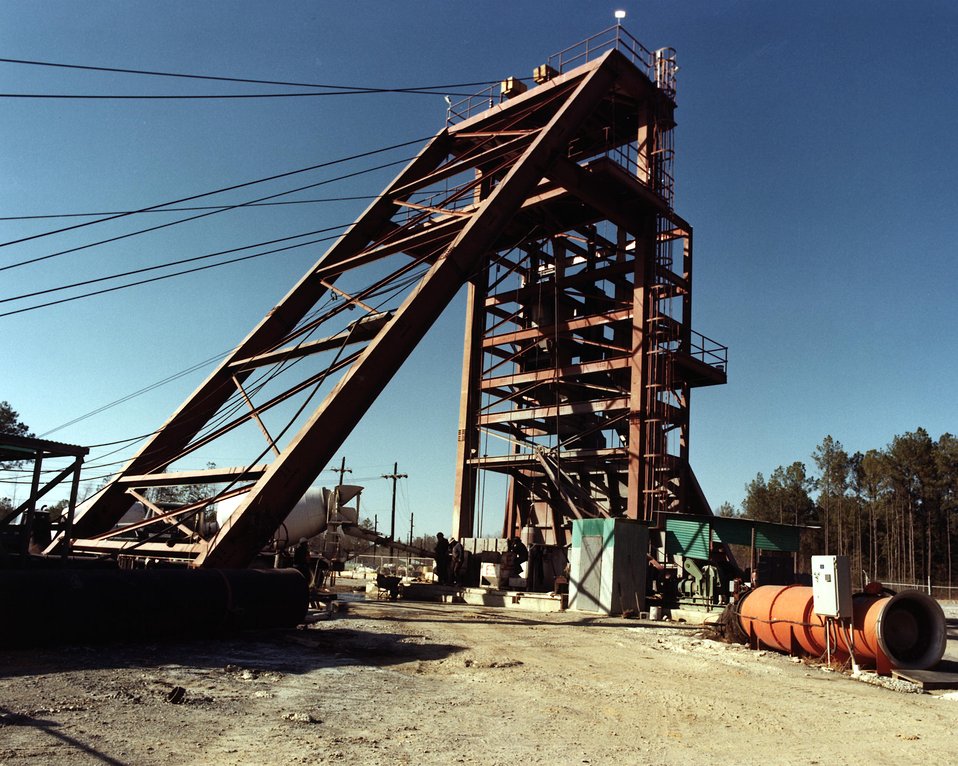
HEAD FRAME AT THE DEPARTMENT OF ENERGY'S SHAFT BORER PROJECT NEAR OAK GROVE ALABAMA.

THE BORER MACHINE IS CONSTRUCTING THE 1160 FT INTAKE SHAFT AT U. S. STEEL OAK GROVE #4 MINE.